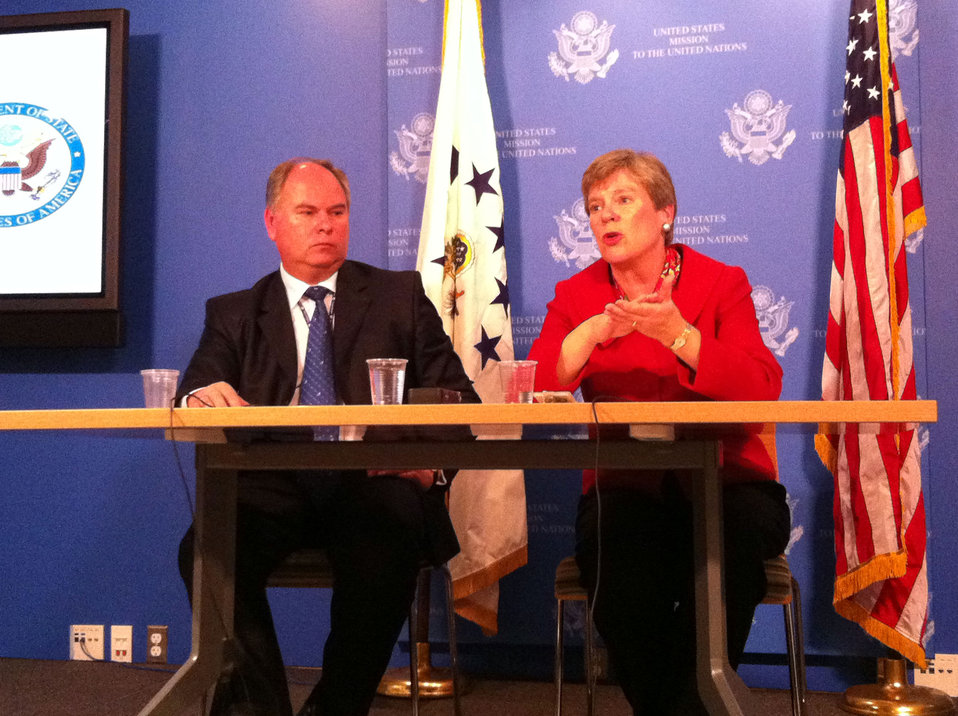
Assistant Secretary Gottemoeller Discusses Implementation of the New START Treaty

Assistant Secretary of State for Arms Control, Verification and Compliance (AVC) Rose Gottemoeller discusses implementation of the new START Treaty at the New York Foreign Press Center in New York, New York, on October 20, 2011.